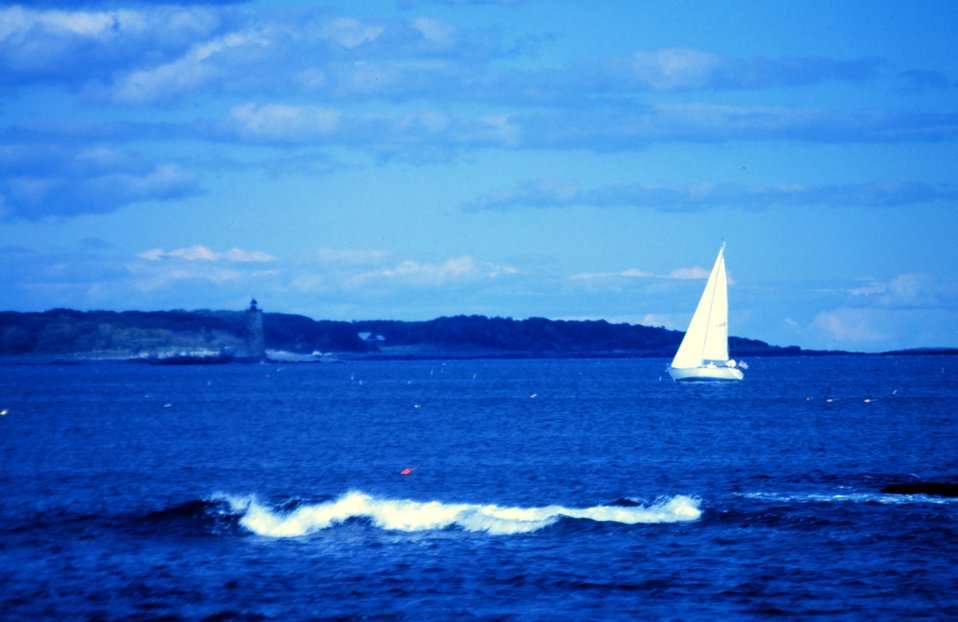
Newcastle light with sailboat on the port tack.